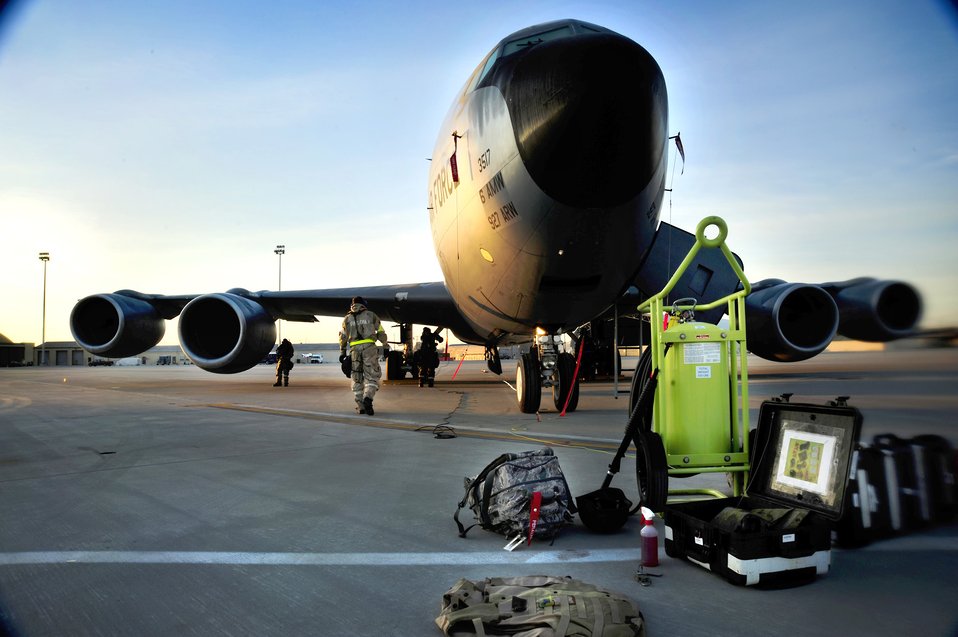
KC-135 Stratotanker maintenance

Airmen conduct maintenance checks on a KC-135 Stratotanker Jan 27, 2011, during an operational readiness inspection at the Savannah Combat Readiness Training Center in Savannah, Ga. The Airmen are assigned to the 112th Aircraft Maintenance Squadron.